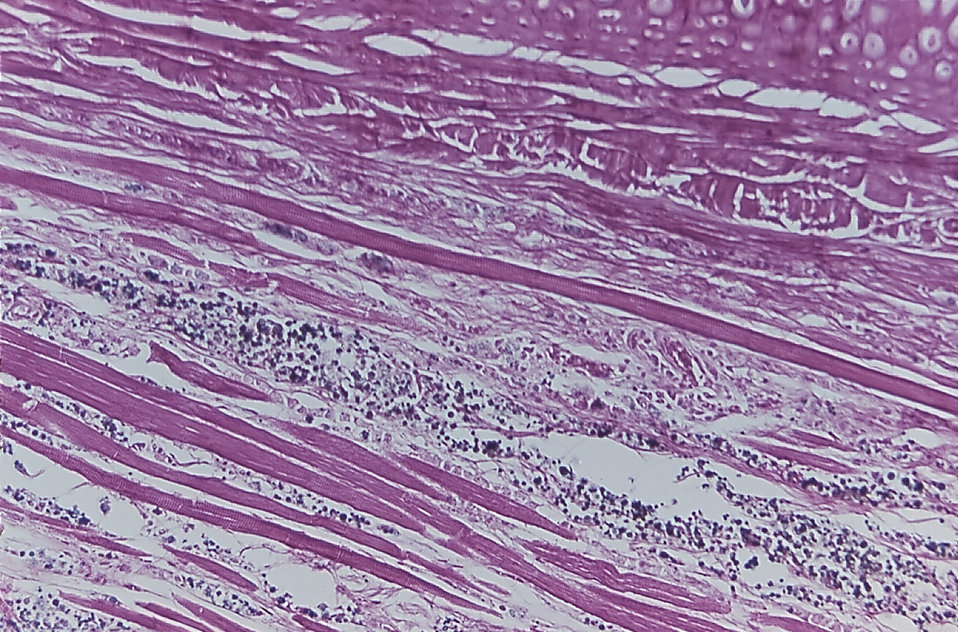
Using a Gomori staining technique, this photomicrograph magnified 100X, depicted the mucocutaneous disease, 'protothecosis'. The specimen consisted of a tissue sample that included portions of skin and mucous membrane of a patient's nasal cavity acquired in a clinical setting.